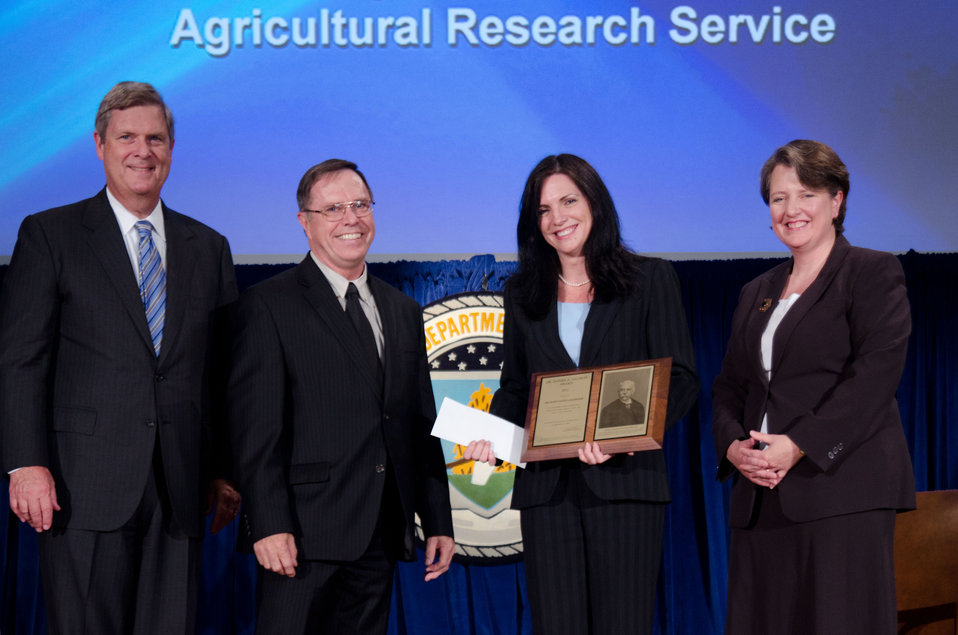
Agriculture Secretary Tom Vilsack (l) and Deputy Secretary Kathleen Merrigan (r), presents the Dr. Daniel E. Salmon Award to Dr. Mary Pantin-Jackwood. For outstanding contributions and notable service in the public’s interest by a federally employed veterinarian who has no more than 10 years of service. On Wednesday, September 14, 2011 in the Jefferson Auditorium at the US Department of Agriculture in Washington, DC.